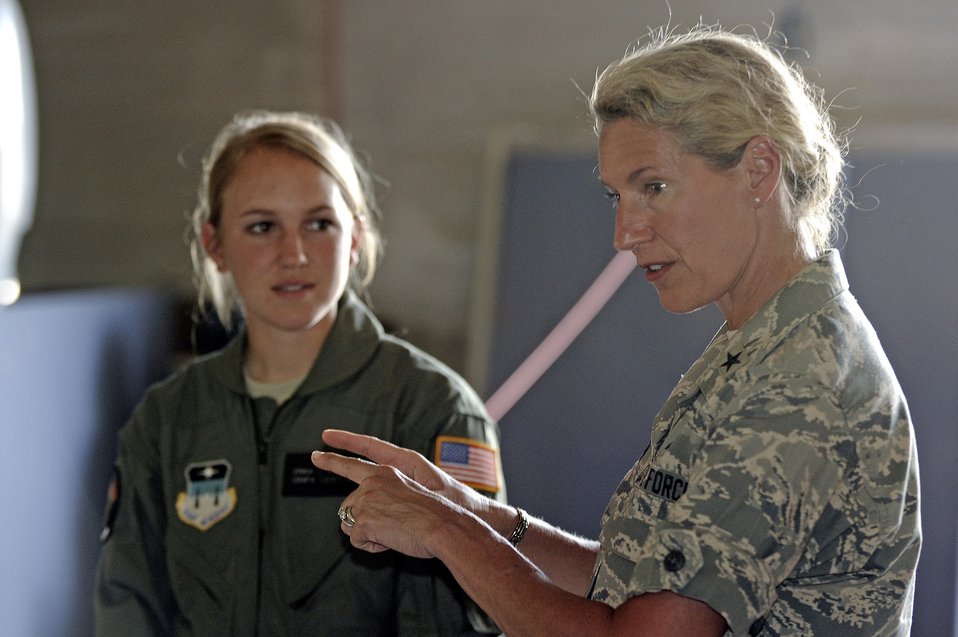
Dean reflects on history of Cadet Wing women

Brig. Gen. Dana H. Born speaks to a group of cadets during a visit to the U.S. Air Force Academy's unmanned aircraft system-remotely piloted aircraft training program July 23, 2009, at Fort Carson, Colo. General Born is a 1983 graduate of the Academy and the first female dean of the faculty.